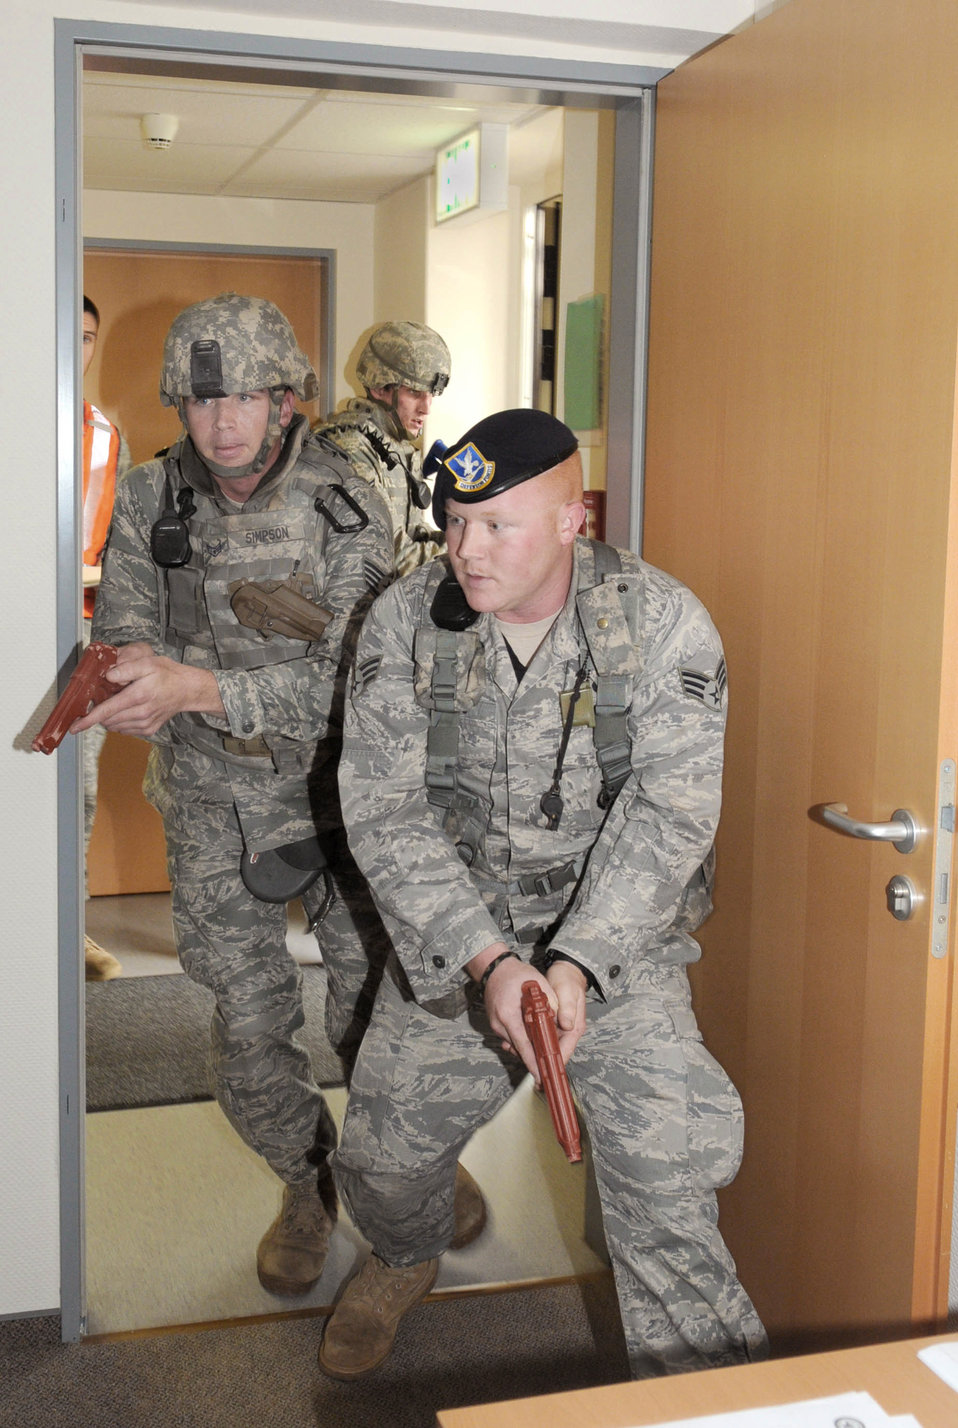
Security Airmen train to handle active shooter threats

Staff Sgt. David Simpson and Senior Airman Devin Cross rush into a room to clear it during active shooter training Oct. 4, 2010, at Spangdahlem Air Base, Germany. Sergeant Simpson is a 52nd Security Forces Squadron K-9 handler. Airman Cross is a 52nd SFS patrolman.